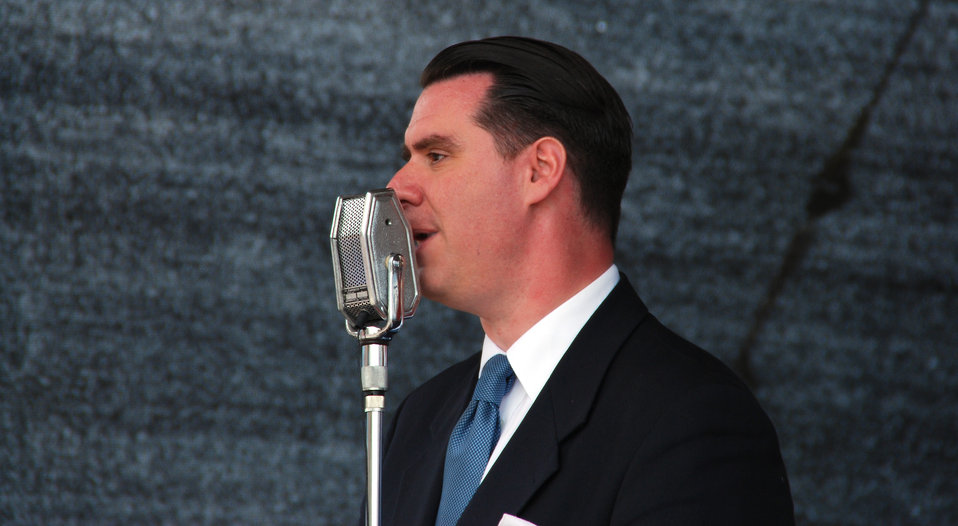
Andrej Hermlin, Deutscher Pianist und Bandleader